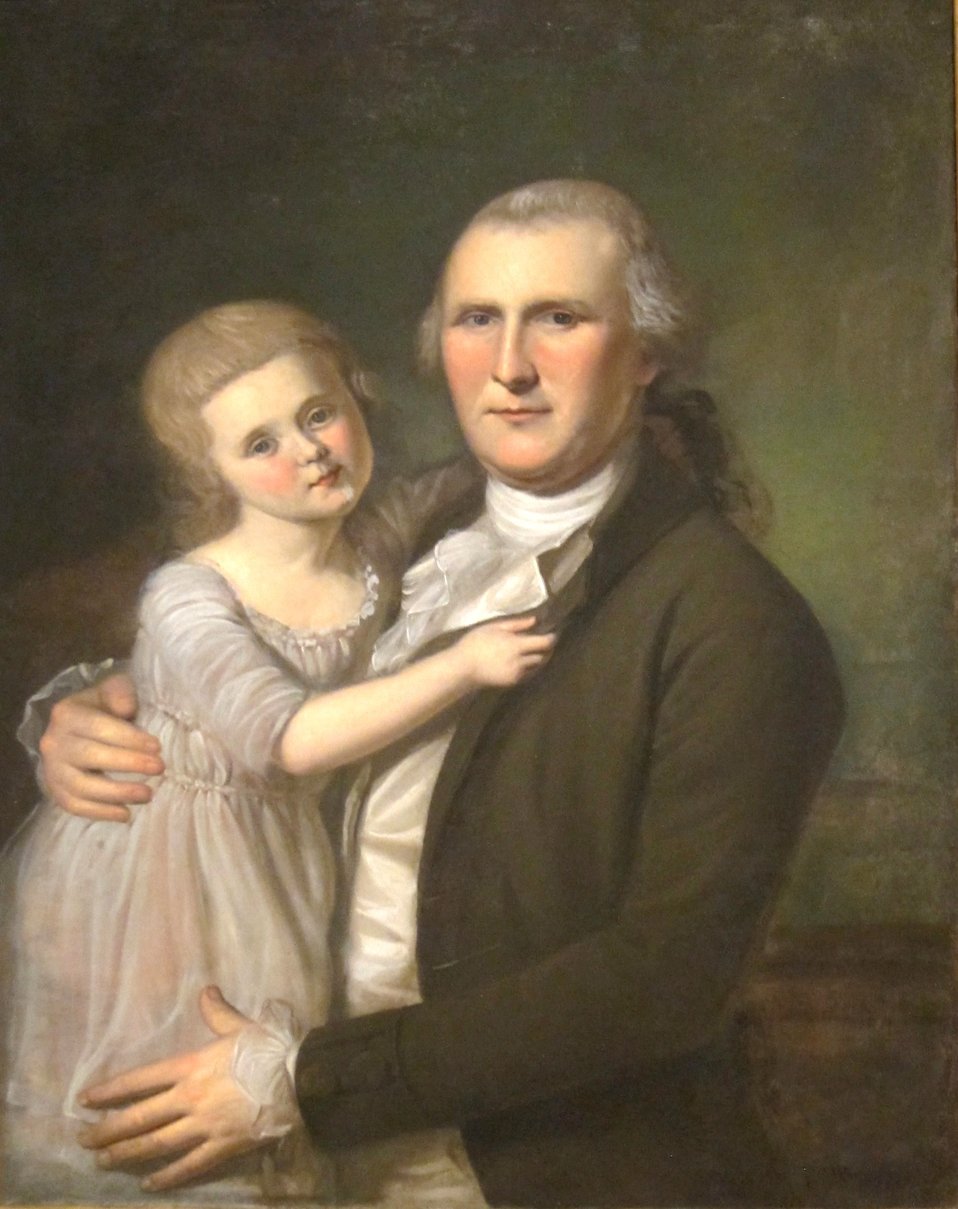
James Crawford and Daughter, oil on canvas painting by Charles Willson Peale, c. 1800, Dayton Art Institute